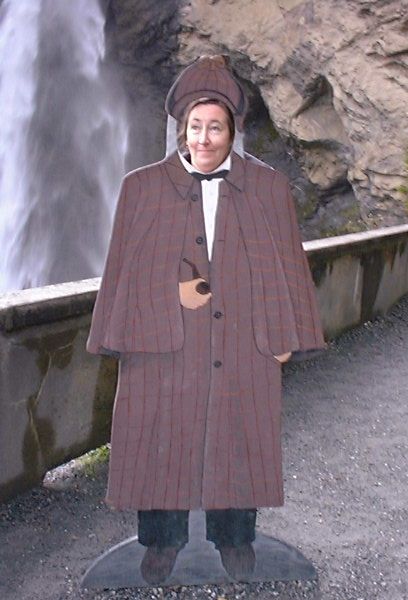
029251 reichenb holmes